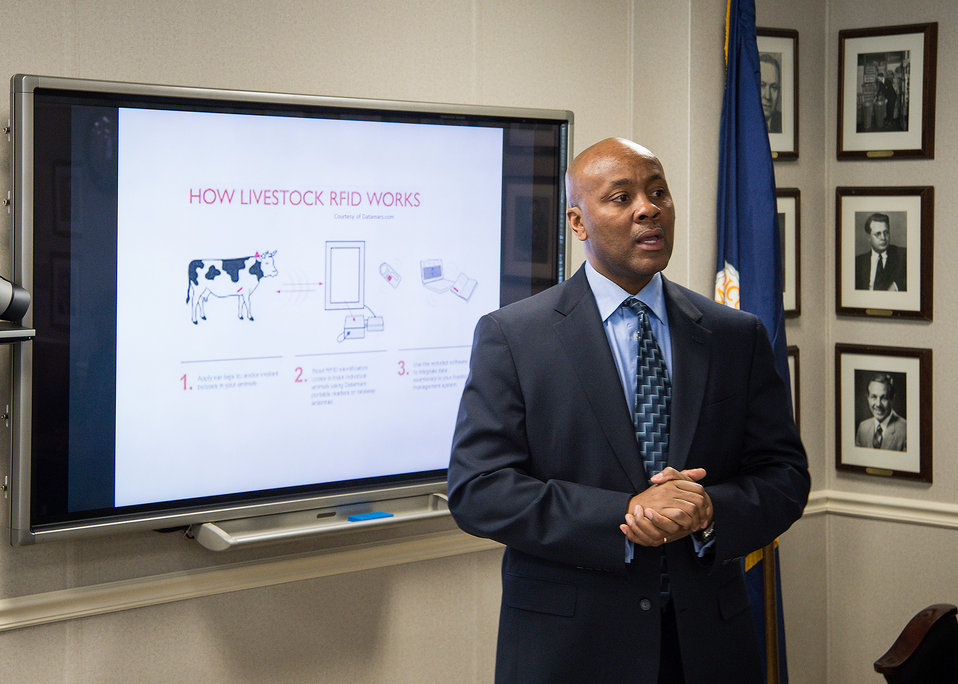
Gary Washington, discussed the Animal and Plant Health Inspection Service, Animal Disease Traceability Information System with students from Thomas Jefferson High School of Science and Technology in Alexandria, VA during the U.S. Department of Agriculture (USDA), Office of the Chief Information Officer (OCIO) IT Job Shadow Day, Tuesday, Mar. 25, 2014. The OCIO IT Job Shadow Day hosts students from local high schools in the Washington, D.C. area annually with IT professionals and agricultural specialists from a variety of mission areas at USDA.